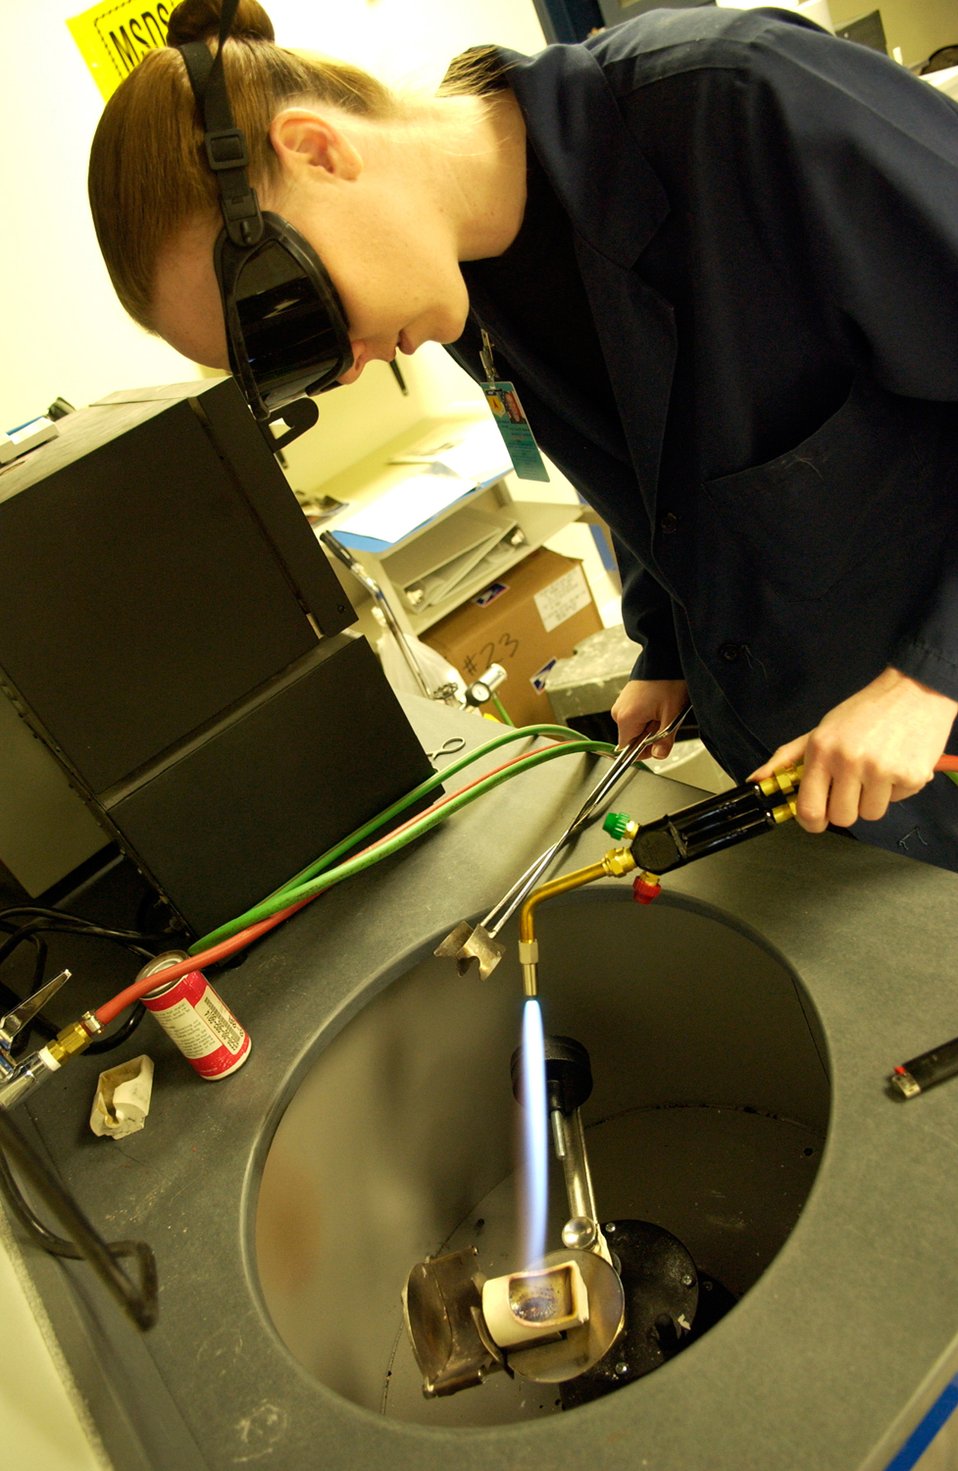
Andersen small dental clinic of the year

Staff Sgt. Tracy Roberts melts gold in preparation for casting a custom crown. She is a 36th Medical Group dental laboratory technician. The dental clinic received the Air Force Small Dental Clinic of the Year Award for 2006.